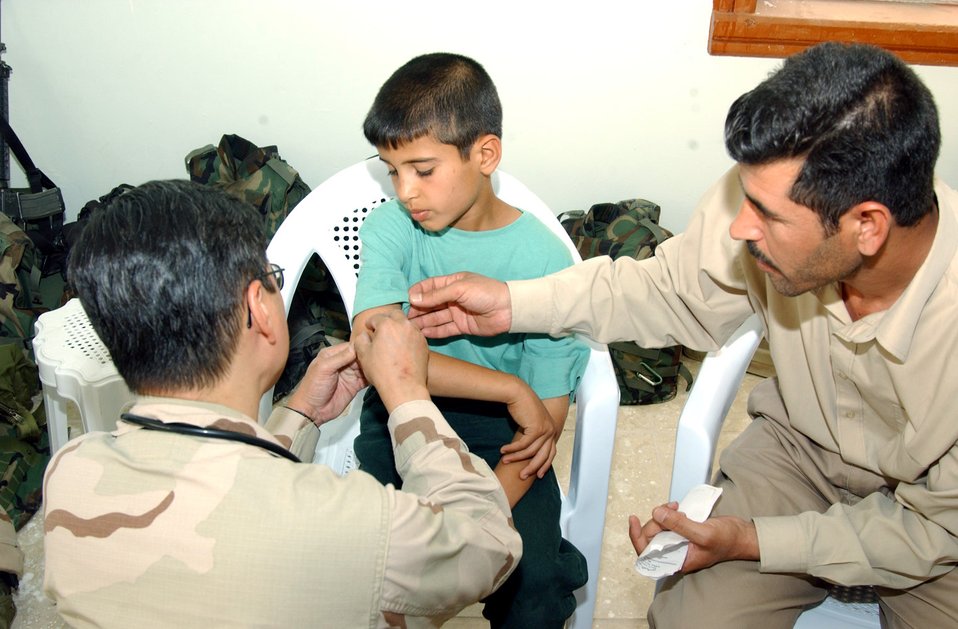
Operation Iraqi Freedom

BALAD AIR BASE, Iraq (AFPN) -- Col. (Dr.) John Cinco checks an Iraqi boy's arm during a medical civic-action project visit. A small contingent of Air Force medical people treated local villagers for minor illnesses and injuries. Dr. Cinco is the 332nd Contingency Aeromedical Staging Facility chief flight surgeon here, and is deployed from the 43rd Medical Group at Pope Air Force Base, N.C.